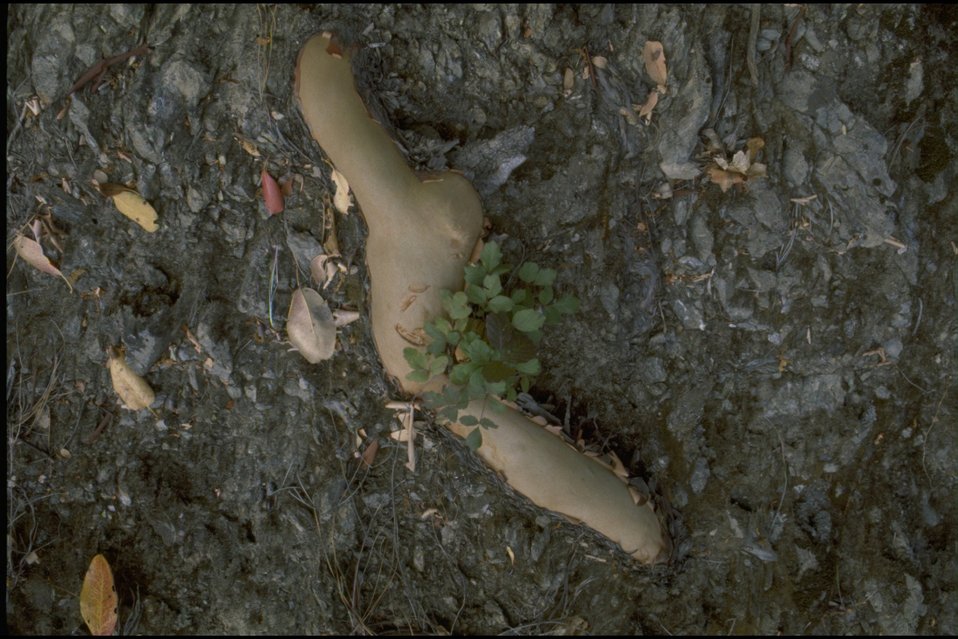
Rogue River - Madrone Root